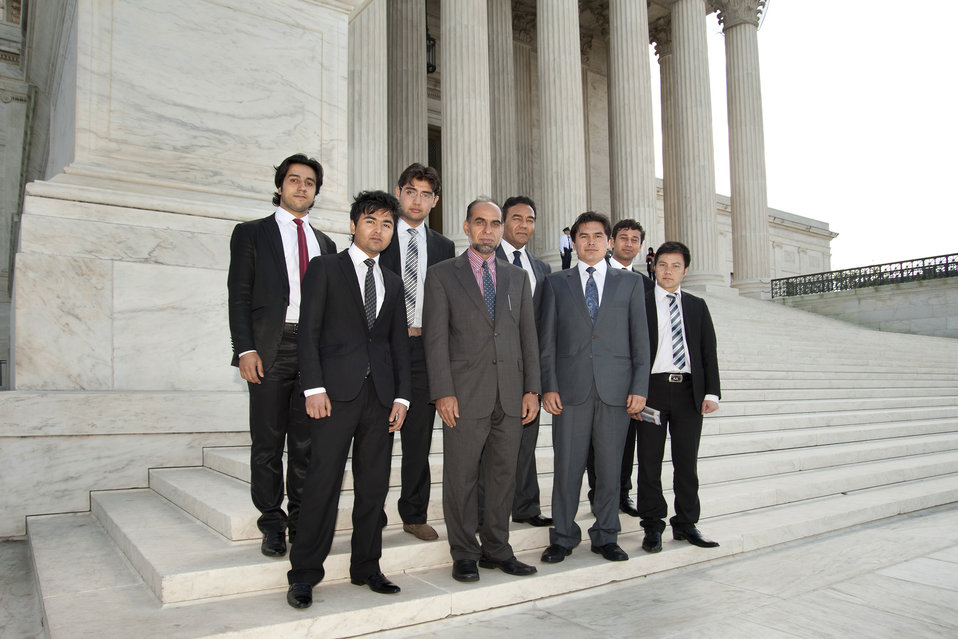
2012 Jessup Moot Court Competitors from Afghanistan Visit the Supreme Court

2012 Philip C. Jessup Moot Court Competitors from Afghanistan visit the Supreme Court of the United States in Washington, D.C., on March 29, 2012.